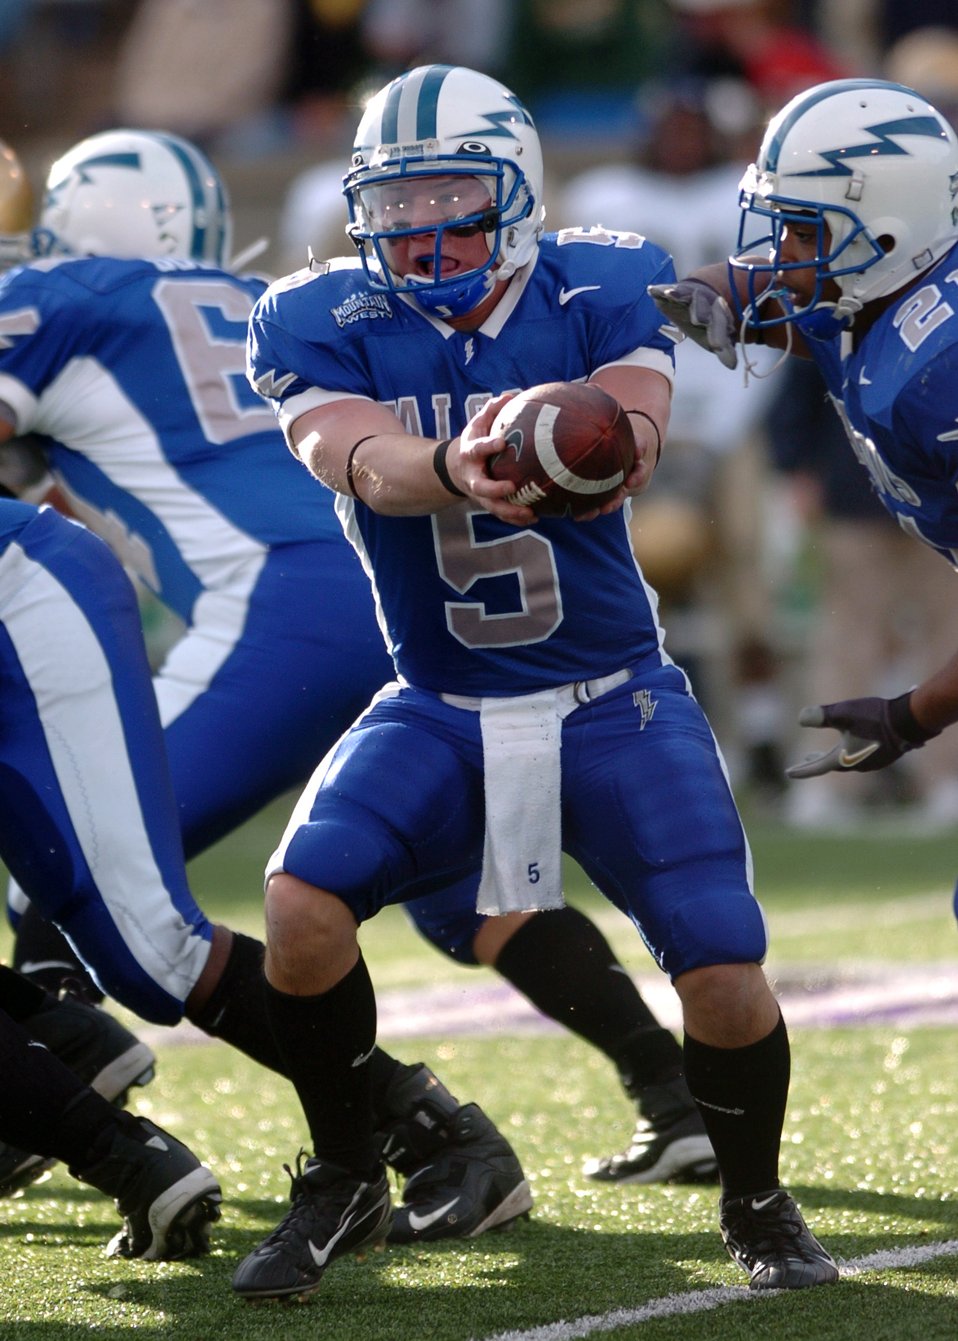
Hand Off

Air Force quarterback Shaun Carney hands off to fullback Ryan Williams Saturday against Notre Dame. Ten Falcons carried the ball for 200 total yards, but Irish quarterback Brady Quinn?s four passing touchdowns were too much for Air Force. Eighth-ranked Notre Dame won, 39-17.